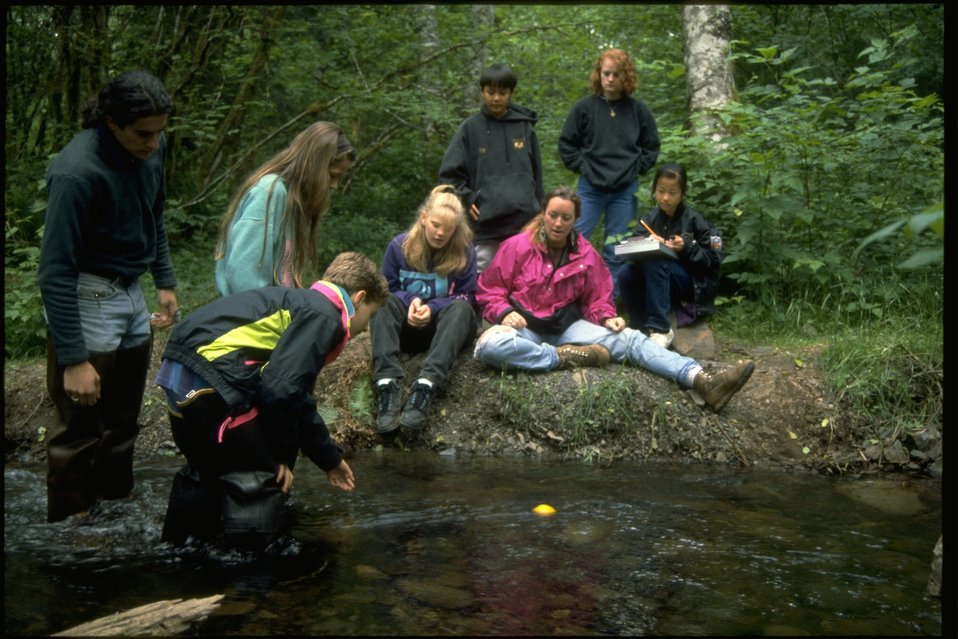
Members of the Cascade Stream Watch are sitting on the stream bank near the Wildwood Recreation Site.